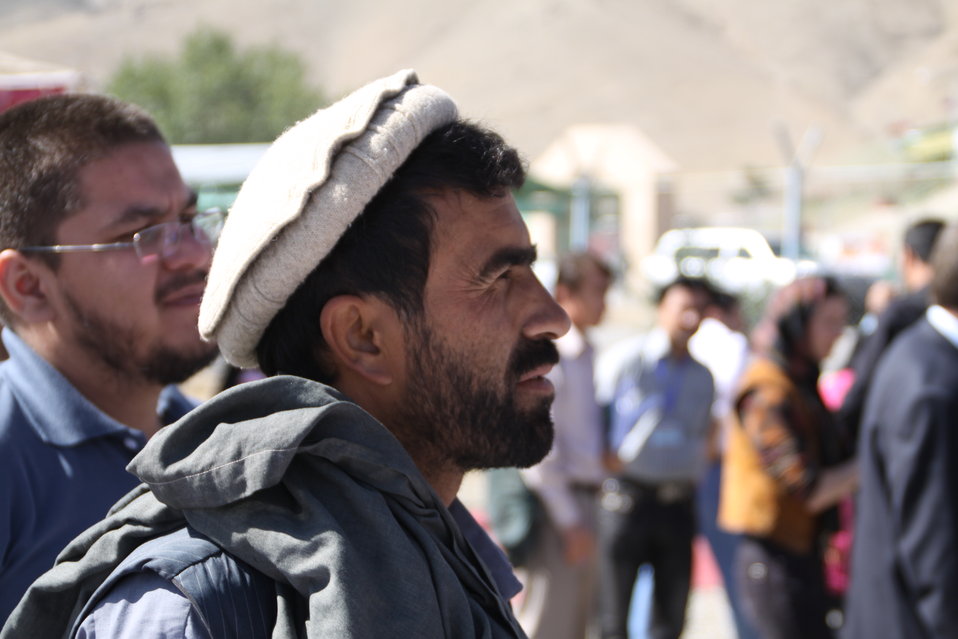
AVIPA Plus Wheat Seed Distribution 101005

US Ambassador Karl Eikenberry and USAID Acting Mission Director Kevin Brownawell joined the Minister of Agriculture, Irrigation and Livestock, H.E. Minister Mohammed Rahimi in signing a Memorandum of Understanding and distributing vouchers to area farmers for wheat and fertilizer.

US Ambassador Karl Eikenberry and USAID Acting Mission Director Kevin Brownawell joined the Minister of Agriculture, Irrigation and Livestock, H.E. Minister Mohammed Rahimi in signing a Memorandum of Understanding and distributing vouchers to area farmers for wheat and fertilizer.